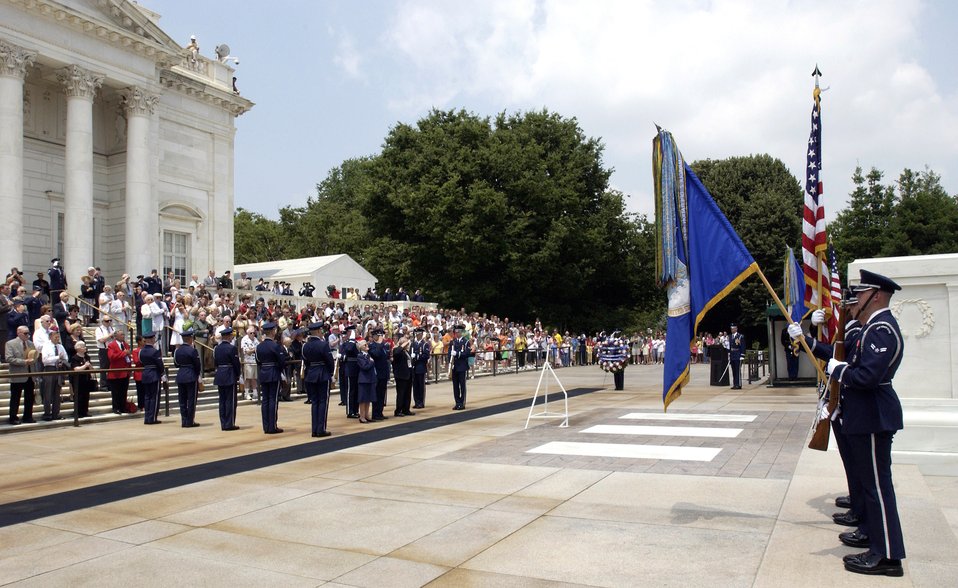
WWII 60th Anniversary Airpower Commemoration Wreath Laying ceremony

WASHINGTON -- During a ceremony at Arlington National Cemetery's Tomb of the Unknowns June 30, Air Force Chief Of Staff General John P. Jumper joined World War II veterans and the public in commemorating airpower and the 60th anniversary of World War II.